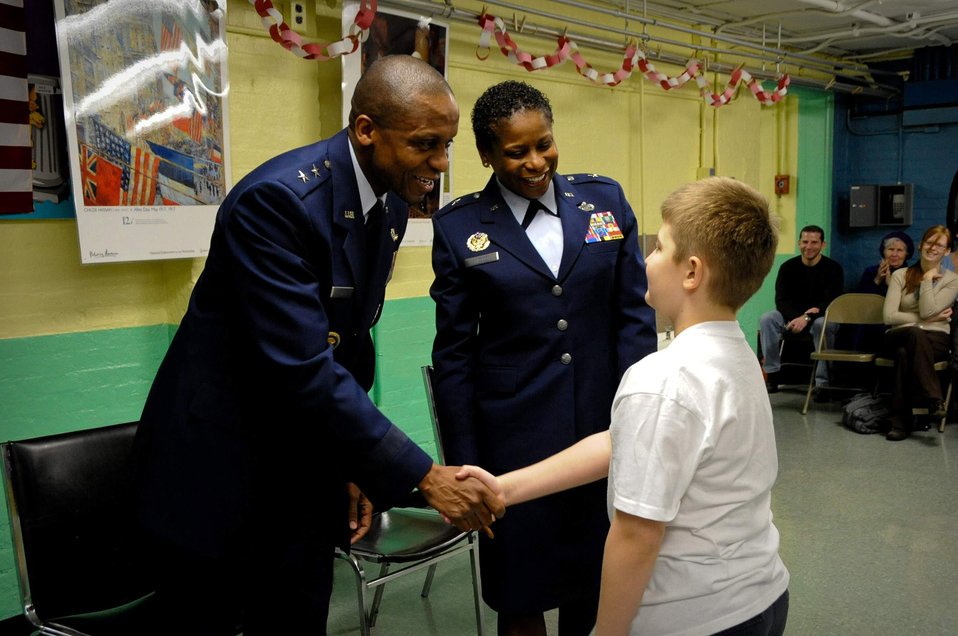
Generals re-enforce 'citizenship day' with core values

Maj. Gen. Darren W. McDew and Brig. Gen. Allyson Solomon shake the hand of a Public School 34 student who thanked the generals for speaking during their Citizenship Day assembly Feb. 11. General McDew is the director of Public Affairs, Office of the Secretary of the Air Force. General Solomon is the assistant adjutant general for the Maryland Air National Guard and special assistant to the National Guard Bureau chief.